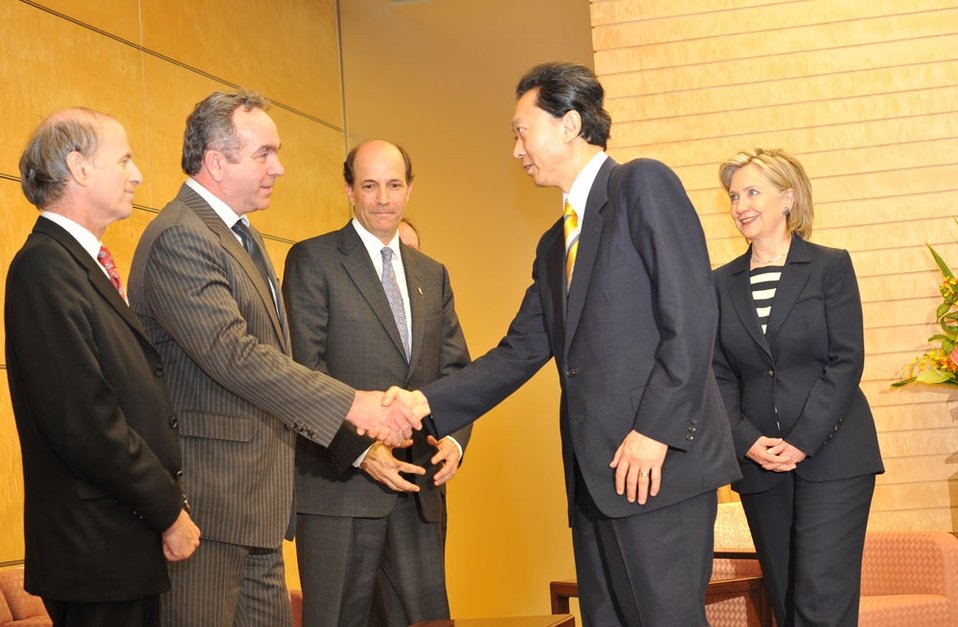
Prime Minister Yukio Hatoyama Shakes Hands With Assistant Secretary Campbell

Prime Minister Yukio Hatoyama shakes hands with U.S. Assistant Secretary of State Kurt Campbell as U.S. Secretary of State Hillary Rodham Clinton and U.S. Ambassador to Japan Roos look on, at the prime minister's office in Tokyo, Japan, May 21, 2010.